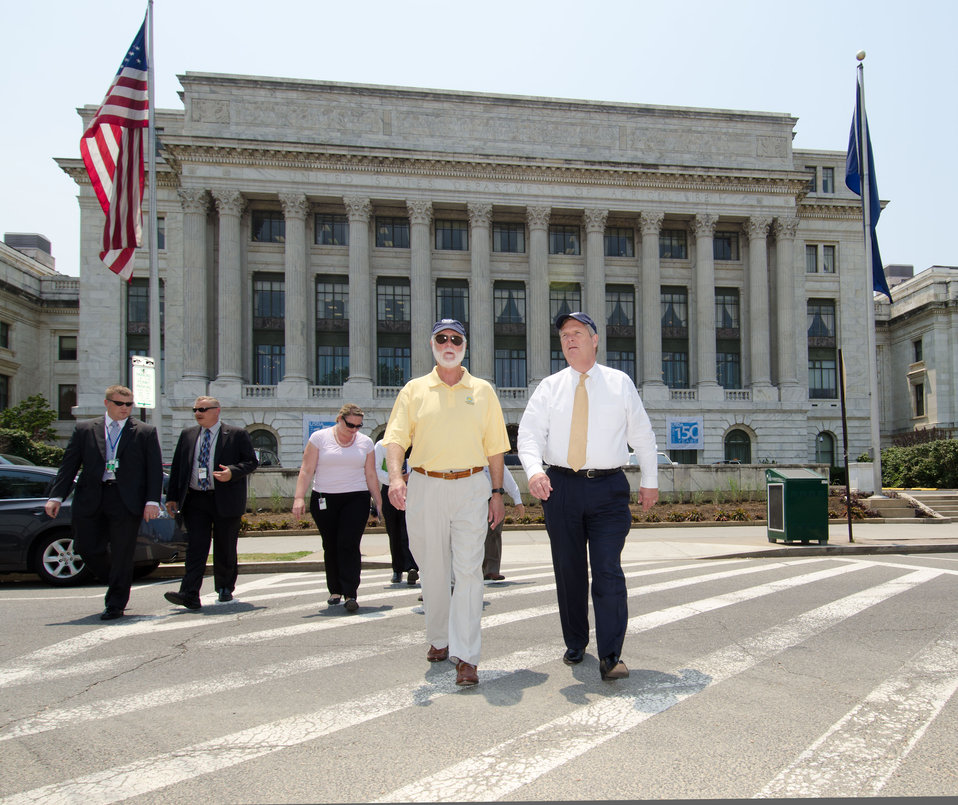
Smithsonian Institution Secretary G. Wayne Clough and Agriculture Secretary Tom Vilsack walk from the U.S. Department of Agriculture Whitten Building across to the 2012 Smithsonian Folklife Festival, on the National Mall in Washington, D.C. on Friday, June 29, 2012. One of the three themes this year is “Campus and Community.” It celebrates the 150 years of the USDA and the Land-Grant University System. The U.S. Department of Agriculture (USDA) and the Land-Grant system extend education across the country, contributing to American agriculture success and rural prosperity. “Campus and Community” has demonstrations, discussions, hands-on activities, and entertainment to that showcase the many ways that this partnership works to improve American agriculture and rural life.